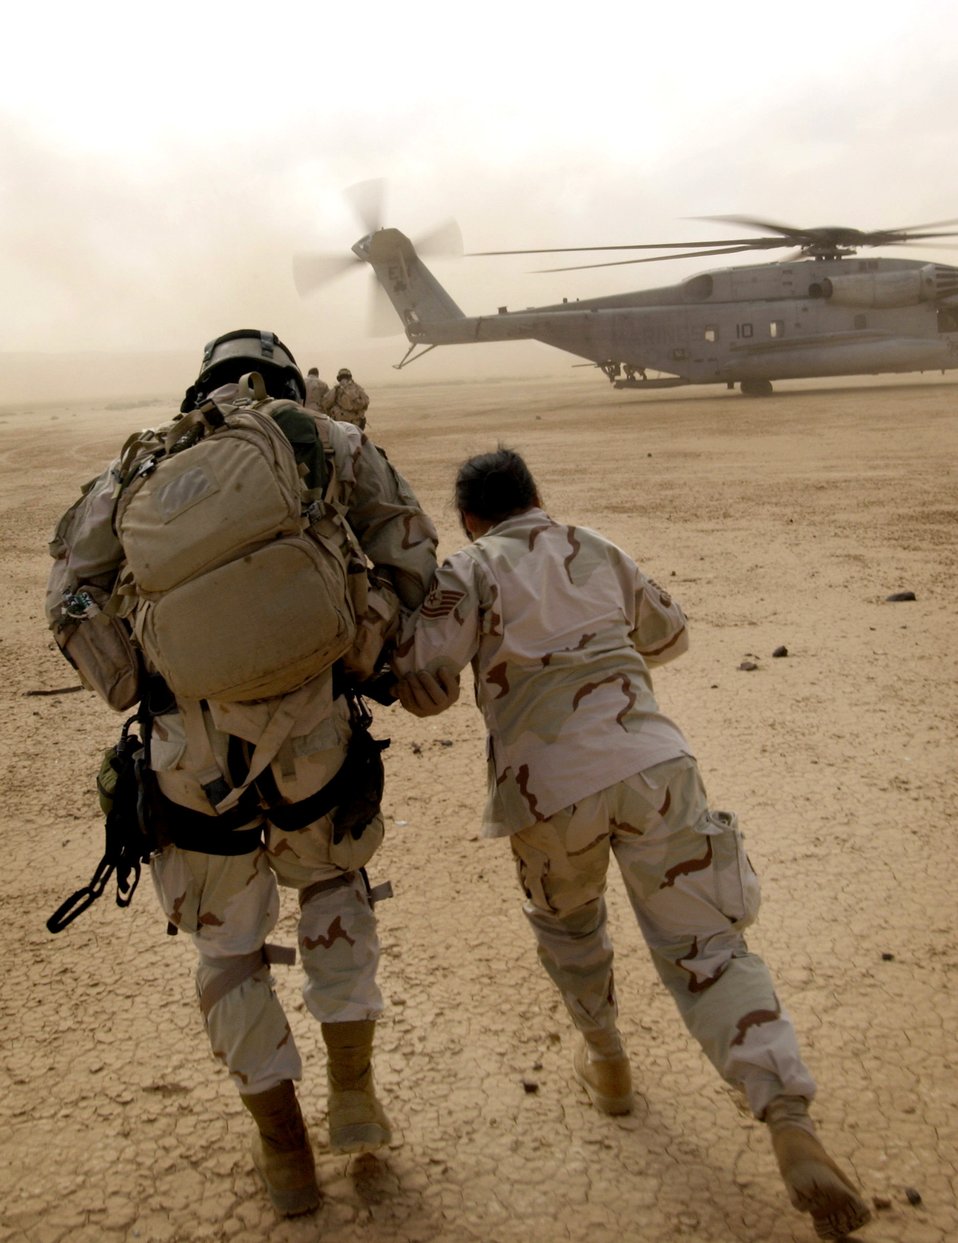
Search and rescue

CAMP LEMONIER, DJIBOUTI, Africa (AFPN) -- An Air Force pararescueman helps Tech. Sgt Evangeline Dyer toward a Marine CH-53 Super Stallion helicopter. The simulated car crash scenario was part of a search and rescue exercise here Feb. 8.